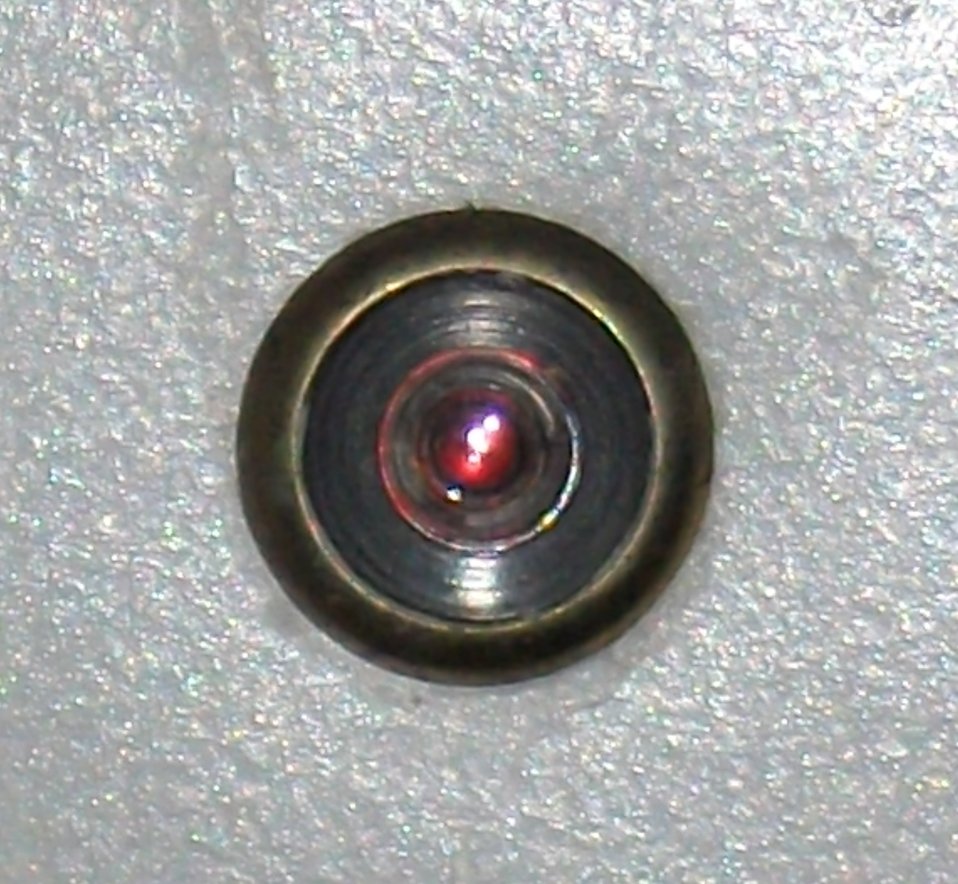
This is an image of a prototype vision apparatus for the 9000 series.